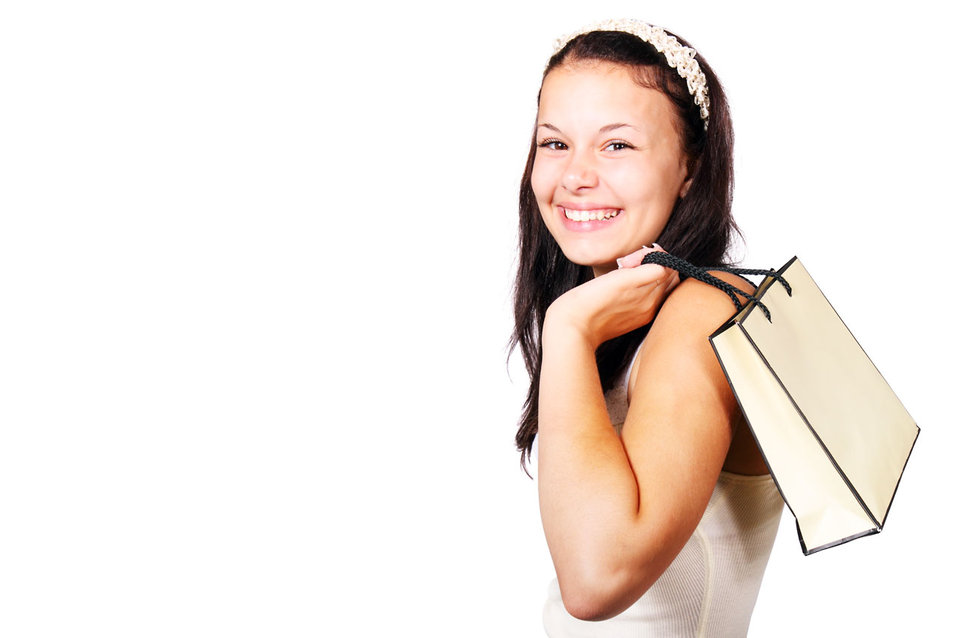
Woman with shopping bag

Young woman with shopping bag isolated on white background.